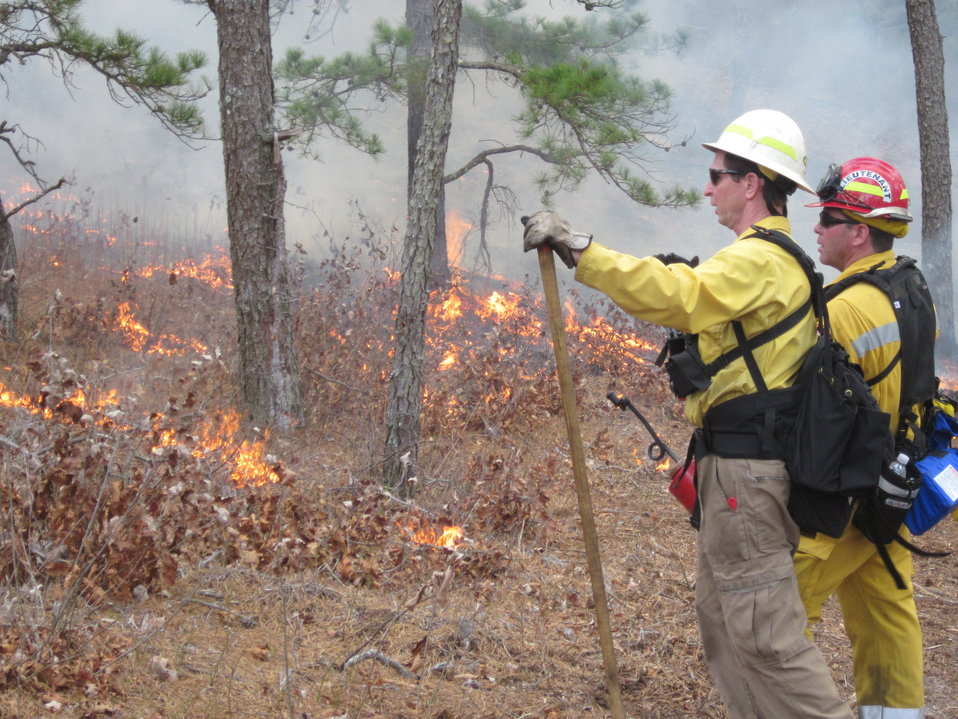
Fire Pros Monitor Burn

Mashpee, Massachusetts, April 5, 2012. Dave Walker, New England Zone Fire Management Officer for the U.S. Fish and Wildlife Service and Lieutenant Rick Thayer of the Town of Mashpee Fire Department watch a controlled burn at the Town of Mashpee Holland Hill Barrens area of Mashpee National Wildlife Refuge. Weather conditions were constantly monitored during the burn, which reduced fire risk to neighboring homes and improved habitat for the New England cottontail. It was conducted by the Town of Mashpee, U.S. Fish and Wildlife Service, State of Massachusetts Department of Conservation and Recreation, and Northeast Forest and Fire Management.